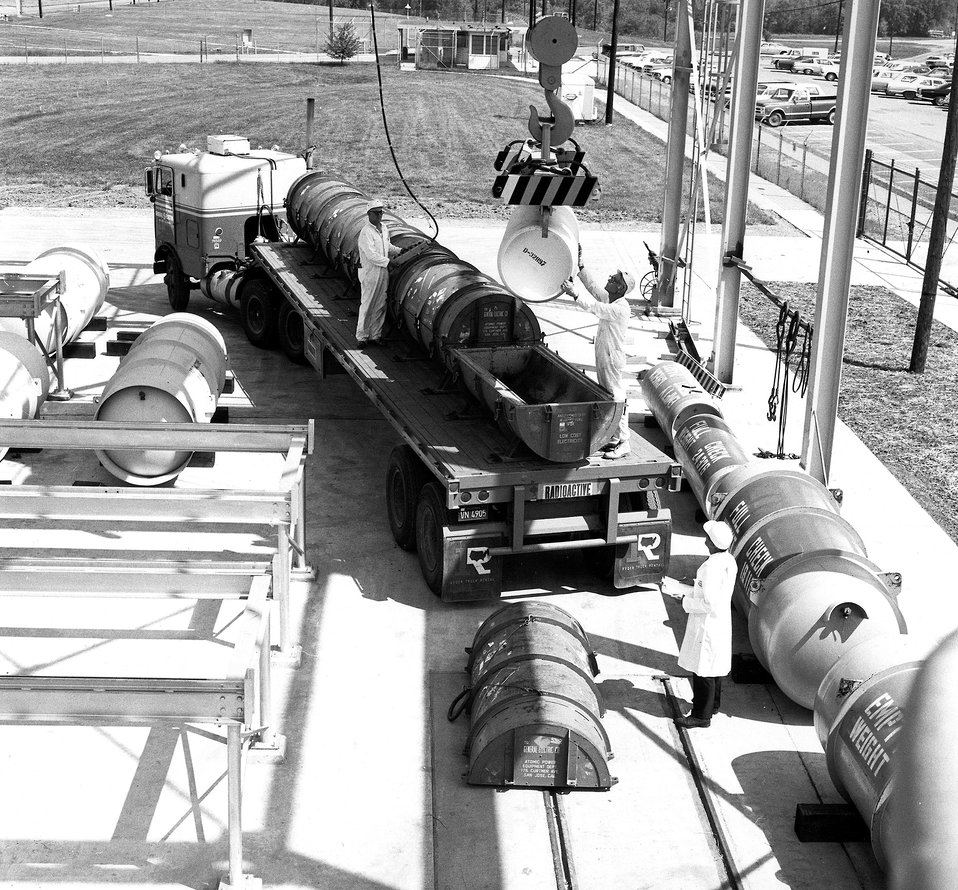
Workmen at the Oak Ridge Gaseous Diffusion Plant load a cylinder of uranium hexaflouride, enriched in uranium-235, for shipment. Circa 1969.